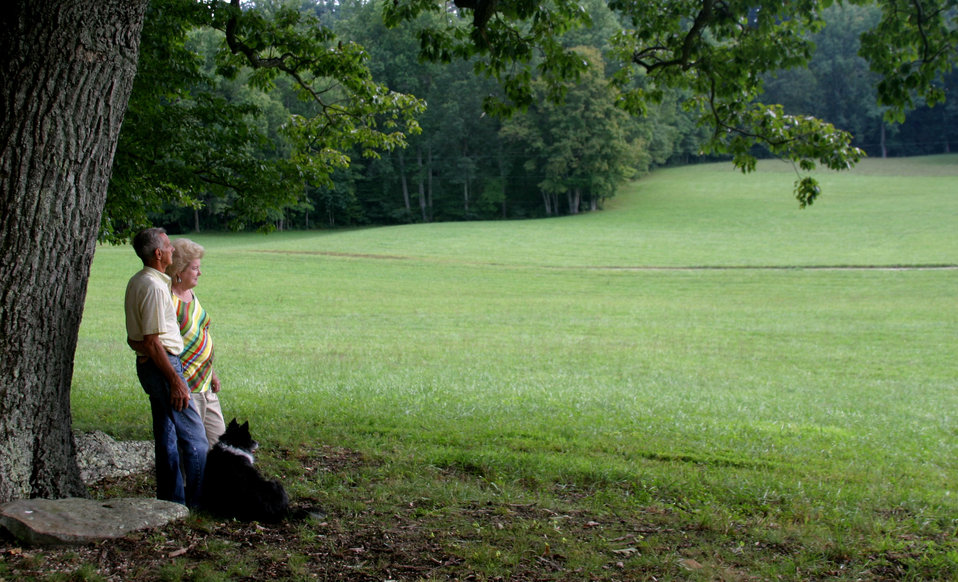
Chesnut 1a

James and Gail Cope look at 27 newly planted American chestnut seedlings on their land in eastern Kentucky. Through a U.S. Department of Agriculture (USDA) Natural Resource Conservation Service (NRCS) Conservation Innovation Grant, the Cope family is working with the American Chestnut Foundation to plant the trees and study how to reforest them successfully.